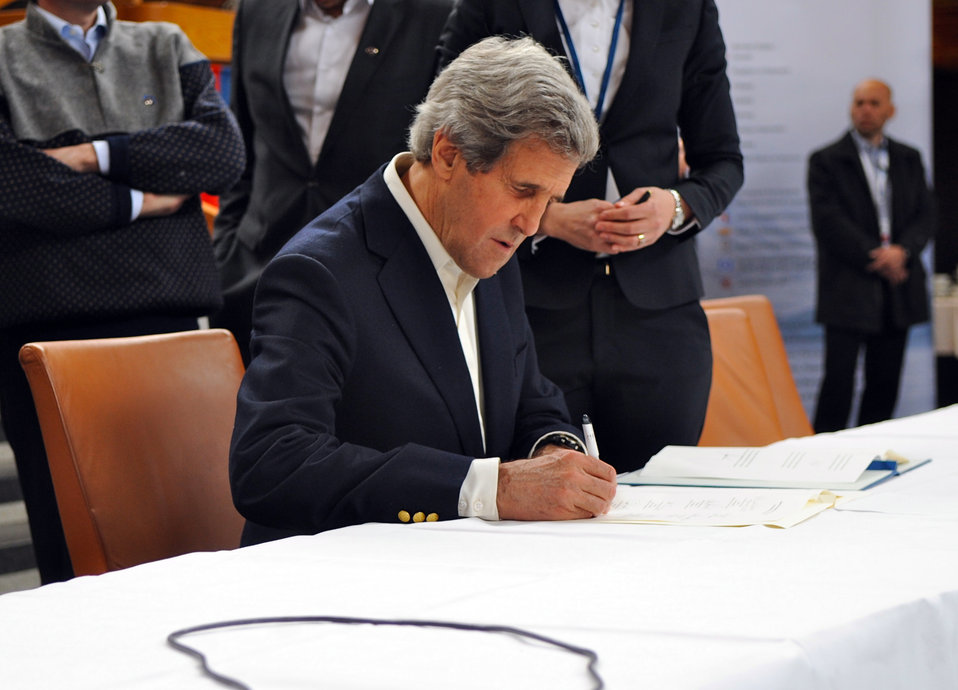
Secretary Kerry Attends the Closing Session of the Arctic Council Meetings

U.S. Secretary of State John Kerry signs the Kiruna Declaration and the Marine Oil Pollution Preparedness and Response Agreement during the close of an Arctic Council meeting in Kiruna, Sweden, on May 15, 2013.